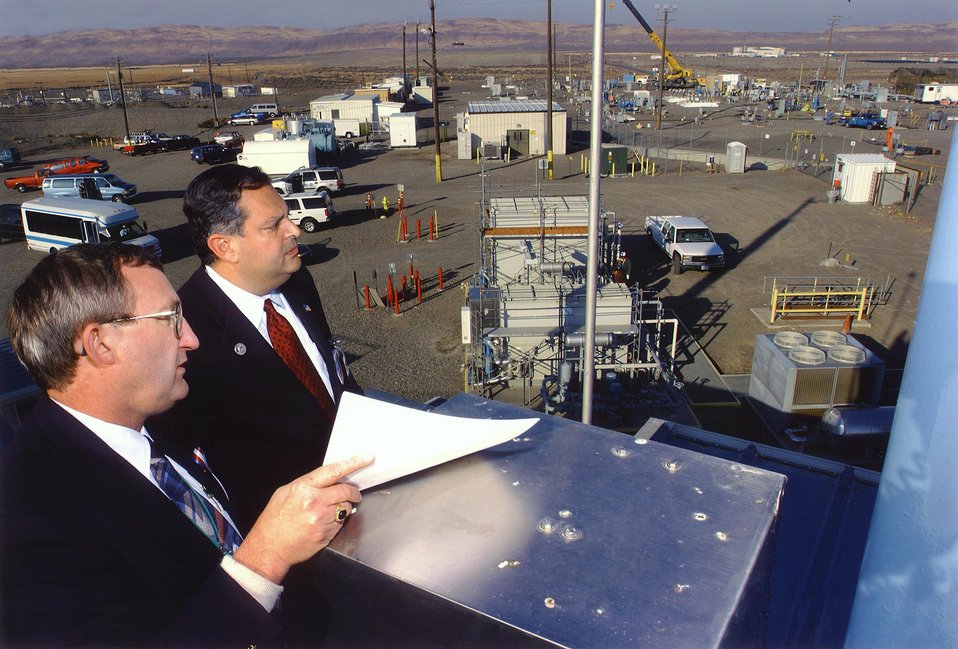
SECRETARY OF ENERGY SPENCER ABRAHAM VIEWING HANFORD TANK FARM IN THE 200 EAST AREA.

SECRETARY ABRAHAM VISITS SINGLE AND DOUBLE-SHELL TANK FARMS IN THE 200 EAST AREA OF THE HANFORD SITE AND GETS A BRIEFING FROM J. BETTS, BECHTEL NATIONAL'S DEPUTY PROJECT MANAGER FOR THE HANFORD TANK WASTE TREATMENT AND IMMOBILIZATION PLANT PROJECT.